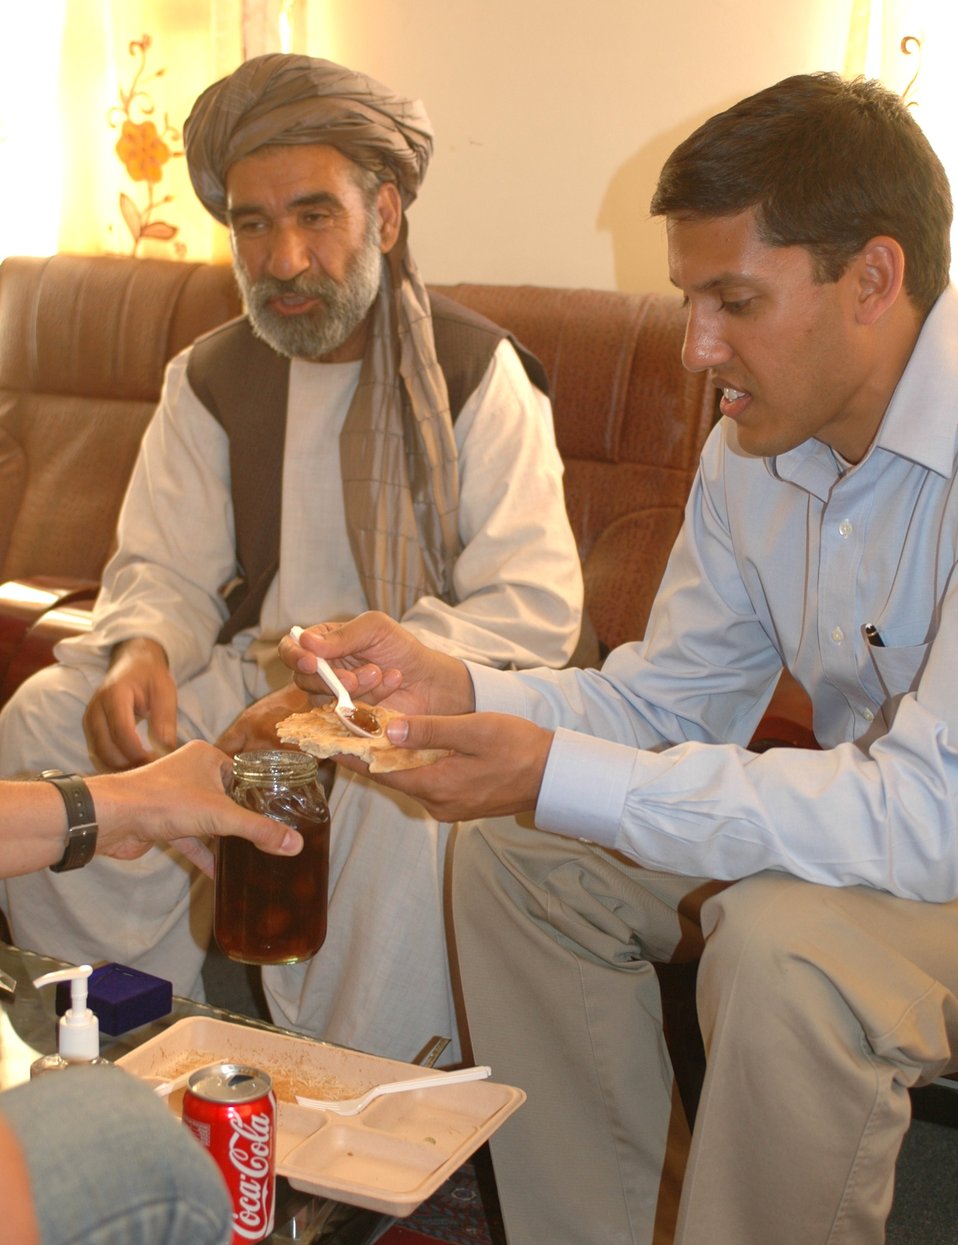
Dr Shah Visits Argandab April 10, 2010